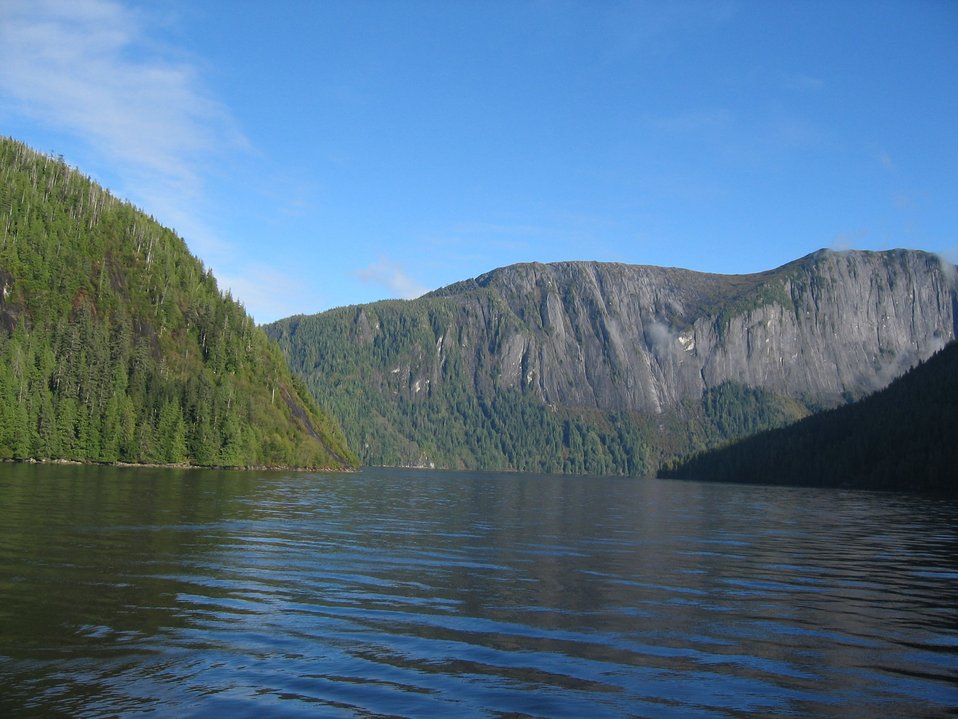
Labyrinthine waterways dissecting the mountains of SE Alaska.